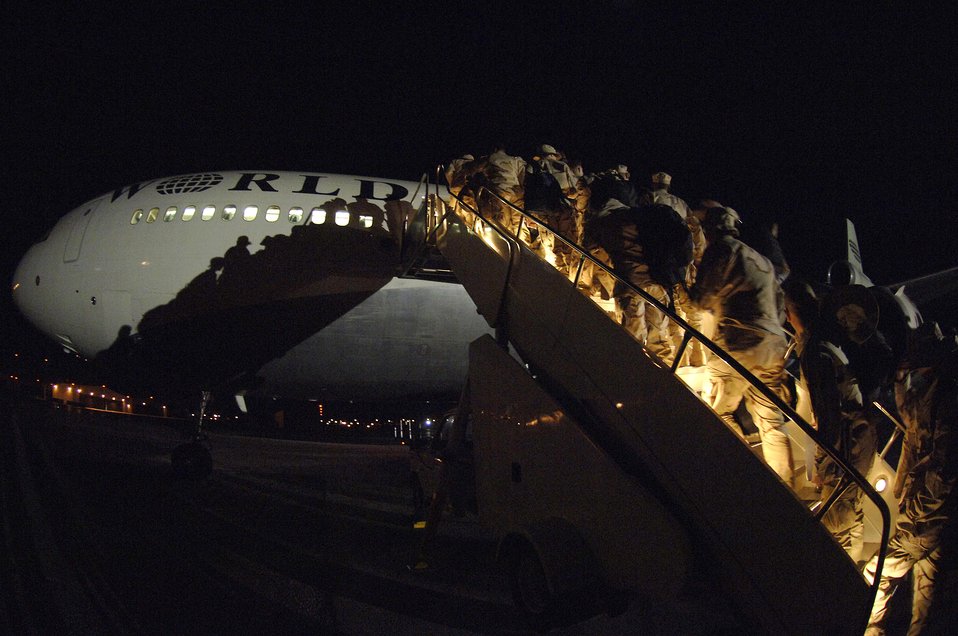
Heading downrange

Airmen from the 28th Bomb Wing board an aircraft Jan. 28 to deploy from Ellsworth Air Force Base, S.D., to Southwest Asia. Nearly 300 Ellsworth Airmen, in various roles, are deploying in support of operations Iraqi Freedom and Enduring Freedom.